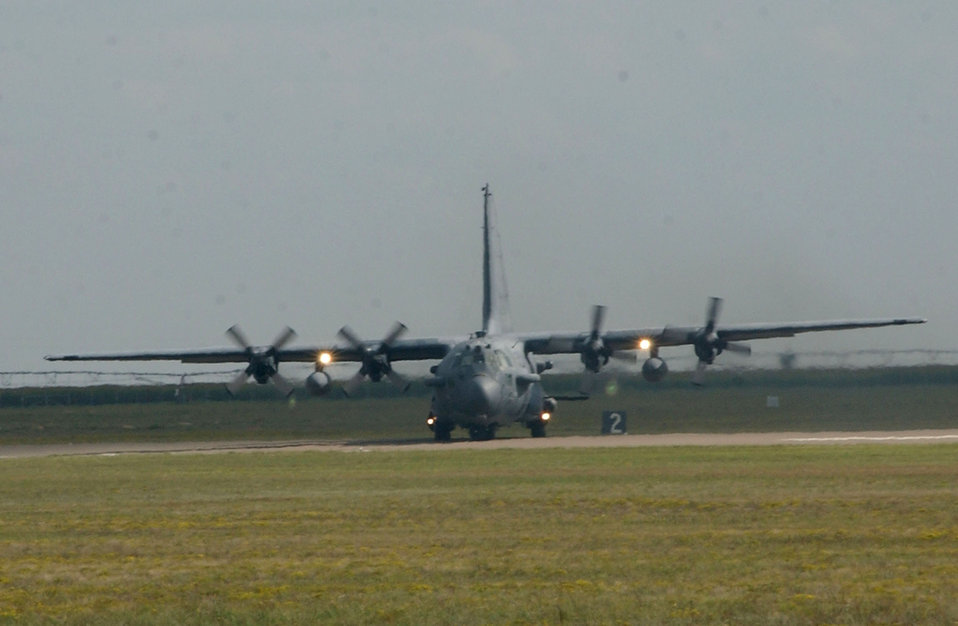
New chapter for Air Force Special Operations begins

A C-130 Hercules turns around after landing Sept. 29 at Cannon Air Force Base N.M. Air Force Special Operations Command leaders assumed command of Cannon in a redesignation and change-of-command ceremony Oct. 1.